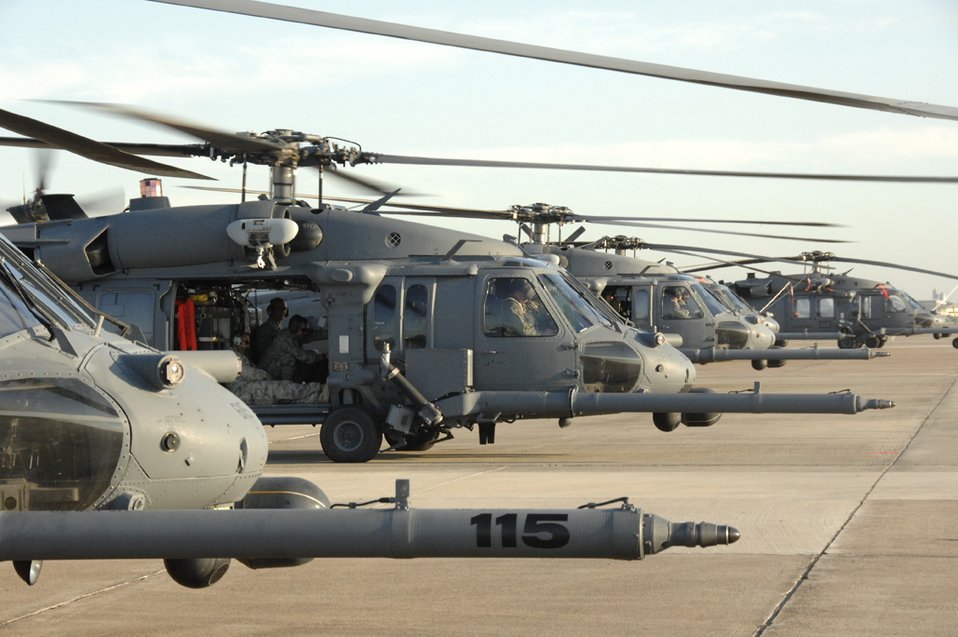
California Air National Guard assists Texas for Hurricane Ike

A line of HH-60G Pave Hawks from the 943rd Rescue Group, Davis-Monthan Air Force Base, Ariz., 176th Wing, Kulis Air National Guard Base, Alaska, and 129th Rescue Wing, Moffett Federal Airfield, Calif., supporting Joint Task Force 129, sit on the flightline at Ellington Field in Houston on Sept. 3. The aircraft were relocated to Kelly Field in San Antonio on Sept. 11 in preparation for Hurricane Ike hitting the Texas and Louisiana Gulf Coast.